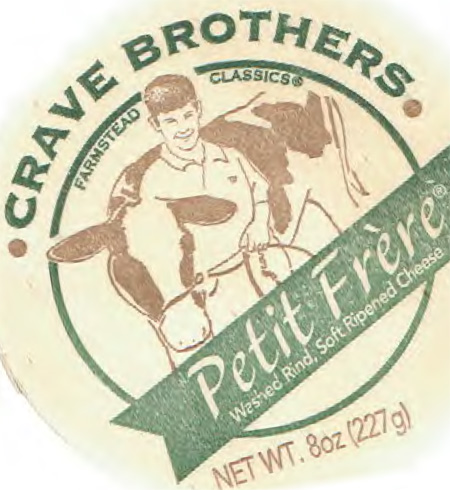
RECALLED – Cheese

July 3, 2013 – Product Recall – Crave Brothers Farmstead Cheese Recalls Les Freres Cheese Products.